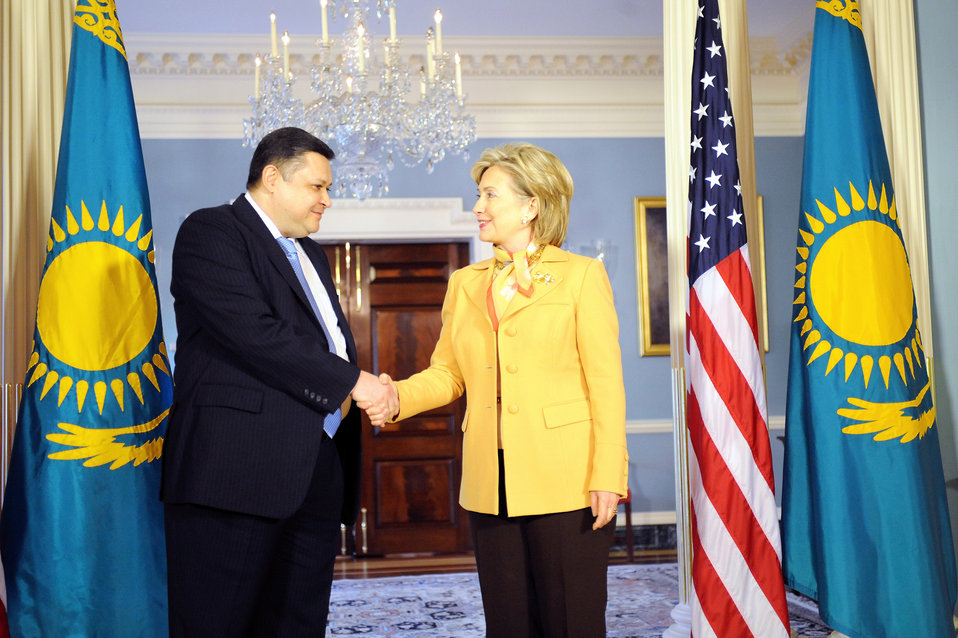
Secretary Clinton Meets With Kazakh Foreign Minister

U.S. Secretary of State Hillary Rodham Clinton hosts a bilateral meeting with Kazakh Foreign Minister Marat Tazhin in the Treaty Room of the U.S. Department of State in Washington, DC May 5, 2009.